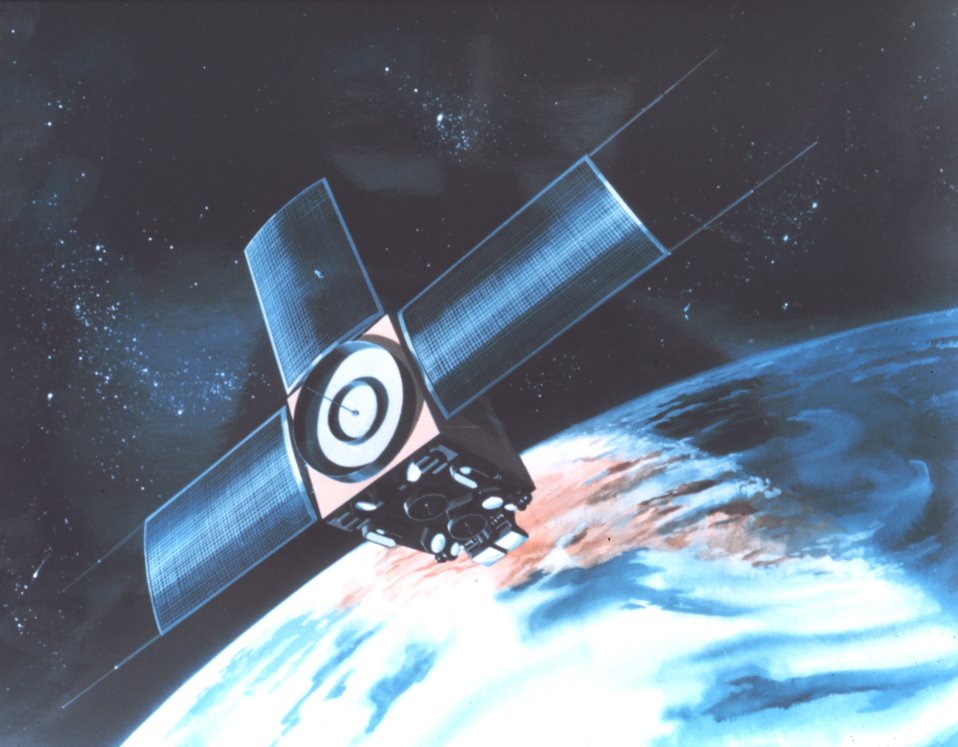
Graphic of TIROS-M or ITOS satellite in orbit.